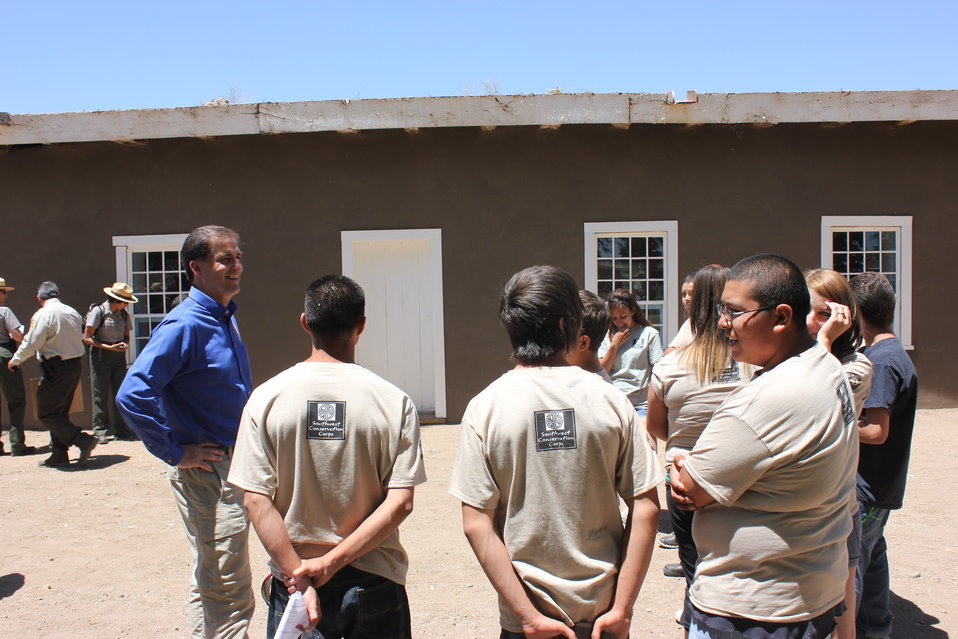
Historic Conservation Easement in Sangre de Cristo Mountains